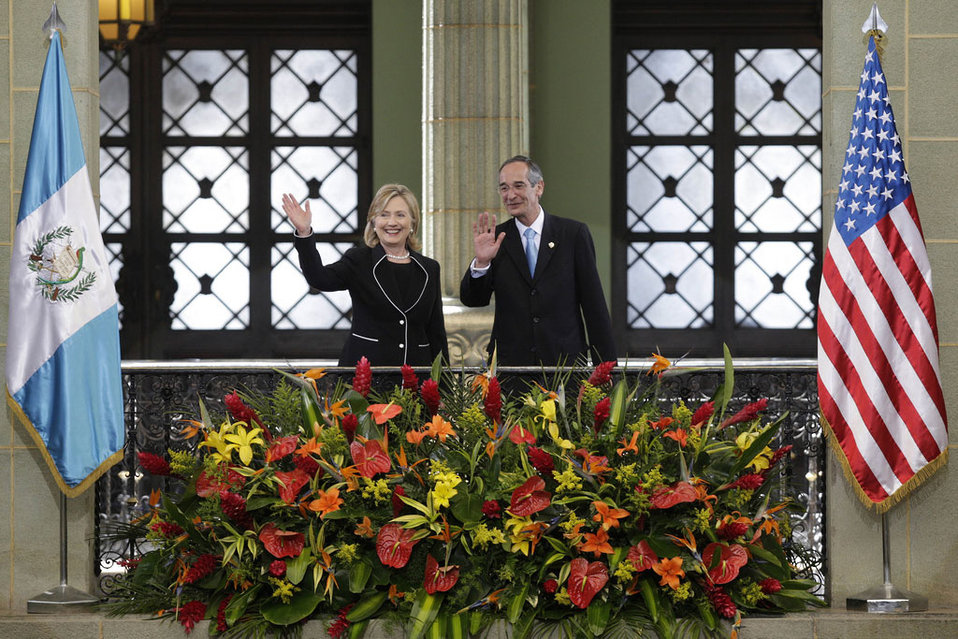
Secretary Clinton With Guatemalan President Alvaro Colom

U.S. Secretary of State Hillary Rodham Clinton waves with Guatemalan President Alvaro Colom on the Presidential Balcony, National Palace of Culture, Guatemala City, Guatemala March 5, 2010.